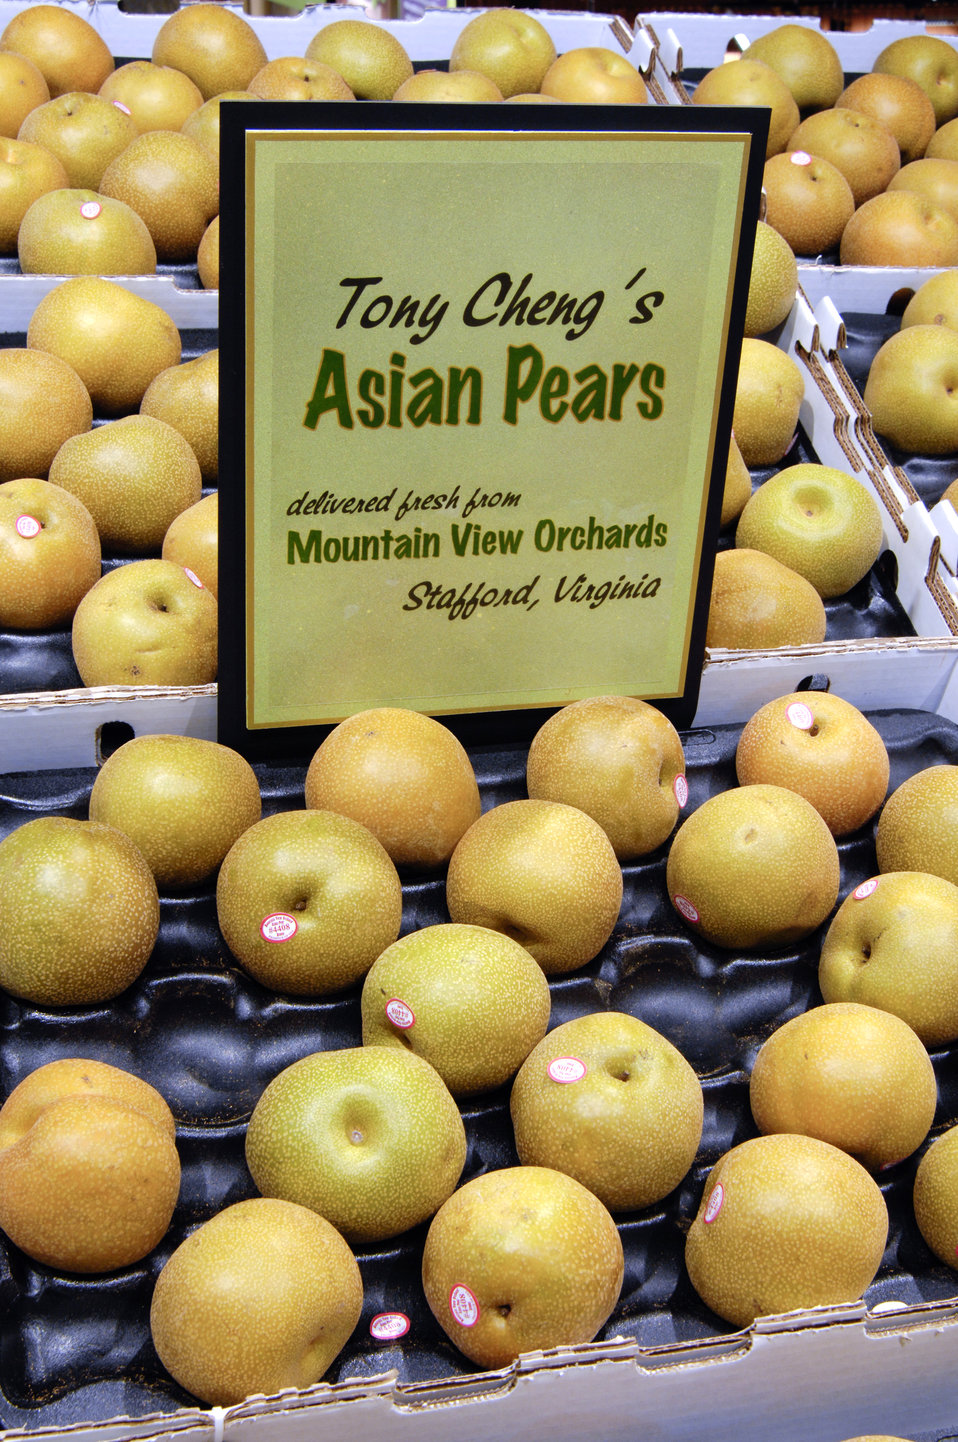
Asian pears sold at Wegman’s Supermarket in Fredericksburg, Virginia on September 1, 2009 displays the required Country of Origin Label (COOL). COOL is a labeling law that requires retailer, such as full-line grocery stores, supermarkets, and club warehouse stores to notify their customers with information regarding the source of certain foods. Food products and covered commodities contained in the law include muscle cut and ground meats of beef, veal, pork, lamb, goat, and chicken; wild and farm-raised fish and shellfish; fresh and frozen fruits and vegetables; peanuts, pecans, and macadamia nuts; and ginseng. The U.S. Department of Agriculture (USDA) Agricultural Marketing Service (AMS) is responsible for the administration and enforcement of COOL.